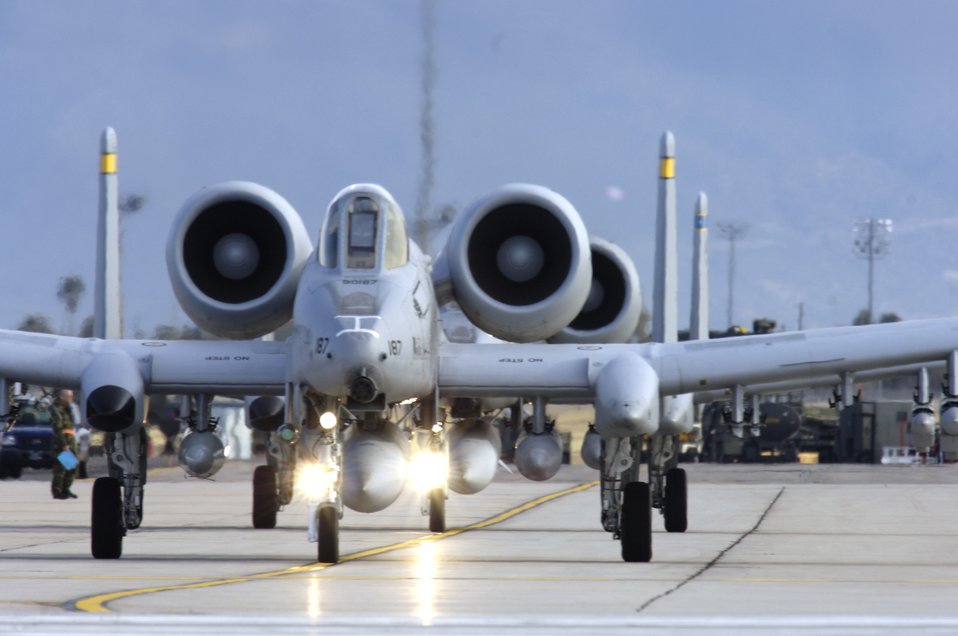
Ready for takeoff

Pilots from the 354th Fighter Squadron taxi in their A-10 Thunderbolt II aircraft to the runway Jan. 21 as they prepare to takeoff for a simulated deployed location during a training exercise at Davis Monthan Air Force Base, Ariz.